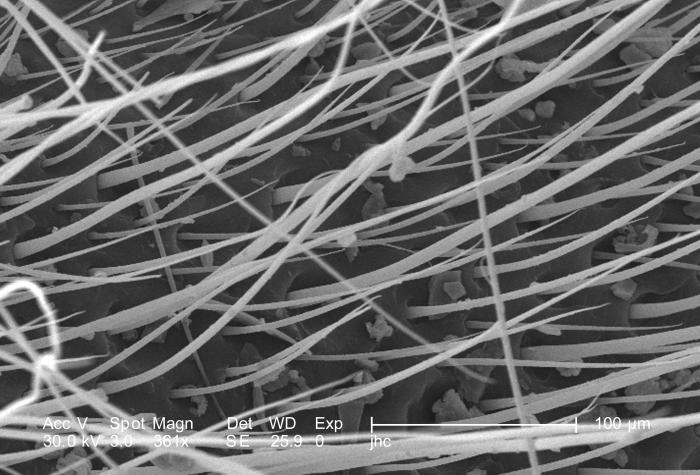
Under a moderate magnification of 361X, this scanning electron micrograph (SEM) depicted some of the morphologic details found on the exoskeletal surface of an unidentified hornet discovered in the suburbs of Decatur, Georgia. In this particular view, we see a close-up of the numerous sensorial 'hairs', or 'setae', which adorn almost the entire exterior, providing the hornet with data indicative of changes encountered in its environment such as chemical, thermal, and tactile queues. These setae are composed of chitin, unlike mammalian hair, which is composed of the molecule keratin.